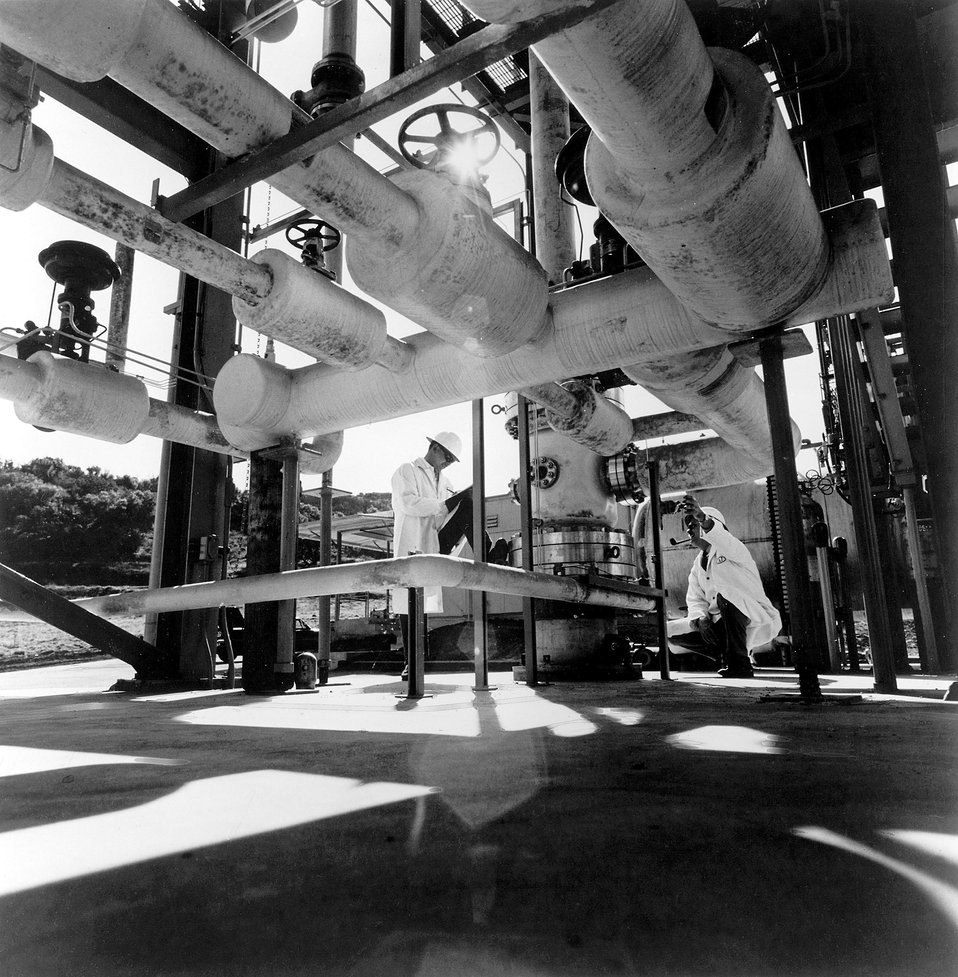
Large Test Facility at Atomic s International's Santa Susana Nuclear Field Laboratory has two water loops for fuel assembly testing. Circa 1970.